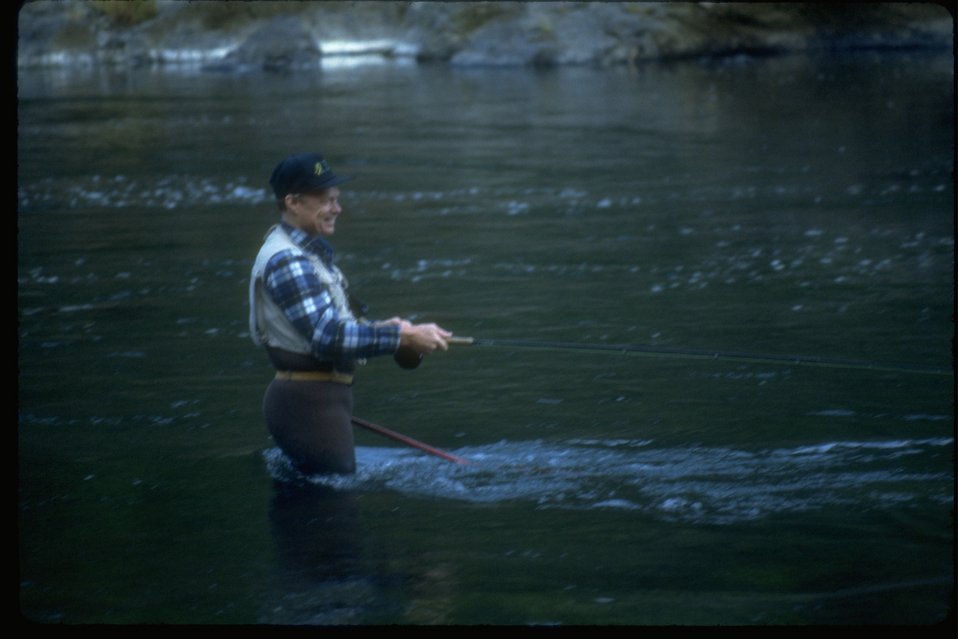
A fly fisherman on the North Umpqua River.